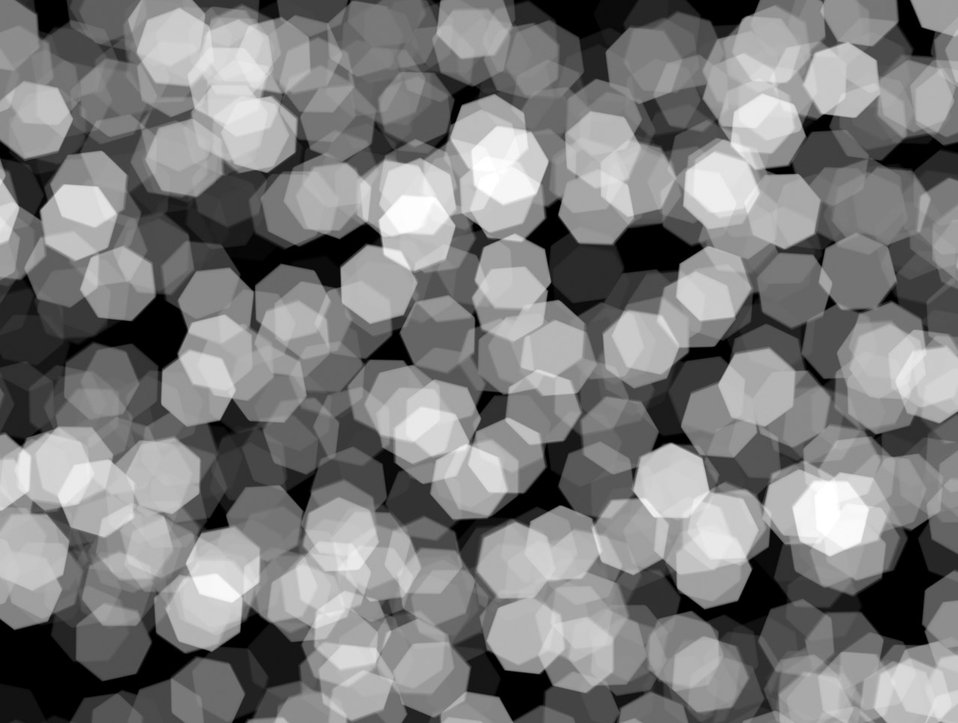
Out-of-focus lights

White lights that are out of focus..